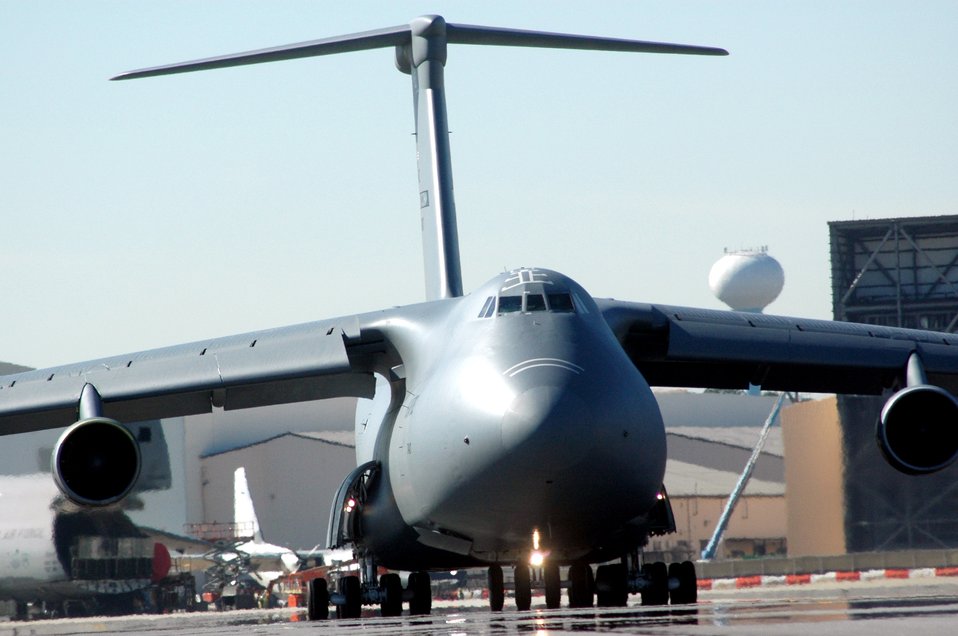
Streamlining maintenance operations

The Warner Robins Air Logistics Center at Robins Air Force Base, Ga., received the 2006 Franz Edelman Award for Achievement in Operations Research on Monday, May 1, 2006, for its use of operations research to streamline maintenance procedures for the C-5 Galaxy. Using innovative management processes, the time required to repair and overhaul the aircraft was reduced 33 percent.